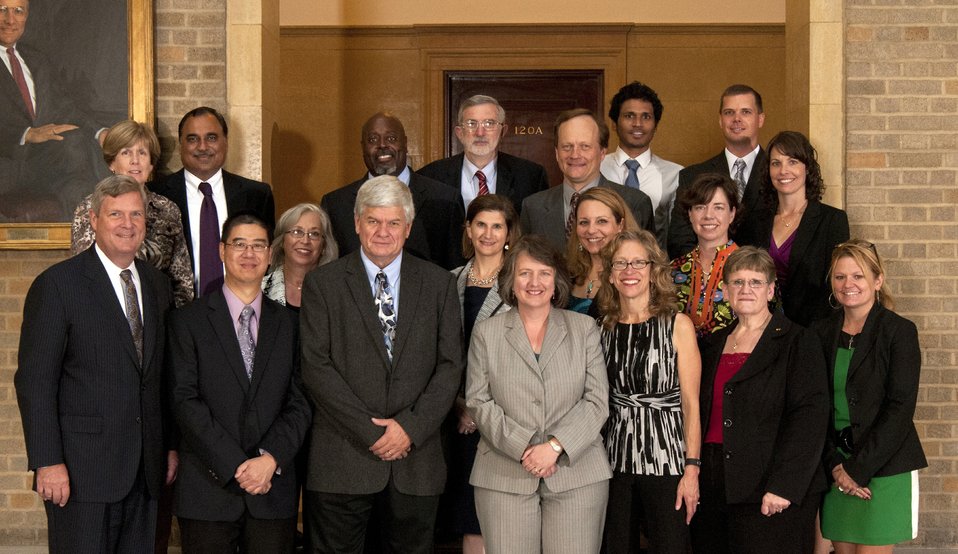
Agriculture Secretary Tom Vilsack and Deputy Agriculture Secretary Kathleen Merrigan with Honor Award Group The Agricultural Research Service (ARS) Your Two Cents Team on the patio of the U.S. Department of Agriculture in Washington, D.C. on Wednesday, Sept. 12, 2012. The ARS Your Two Cents Team For created, established, maintained and continually upgraded the culture-changing employee feedback and communication forum in ARS, Your Two Cents, which facilitates inclusion for employees and continuous improvement for ARS.